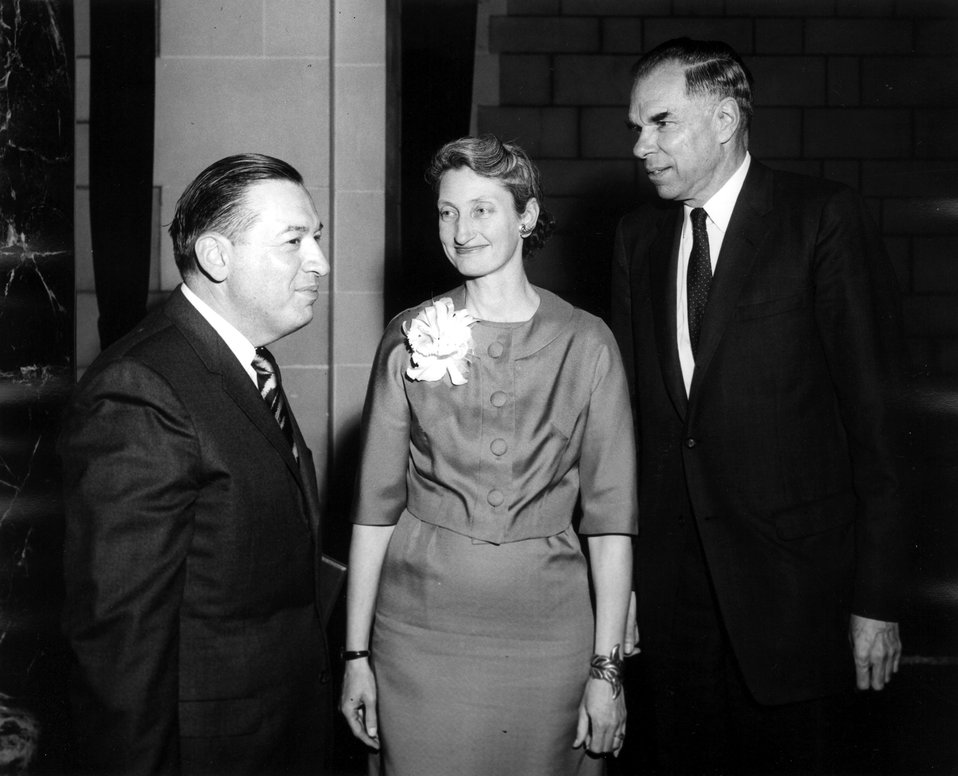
Lawrence Award, 1966.